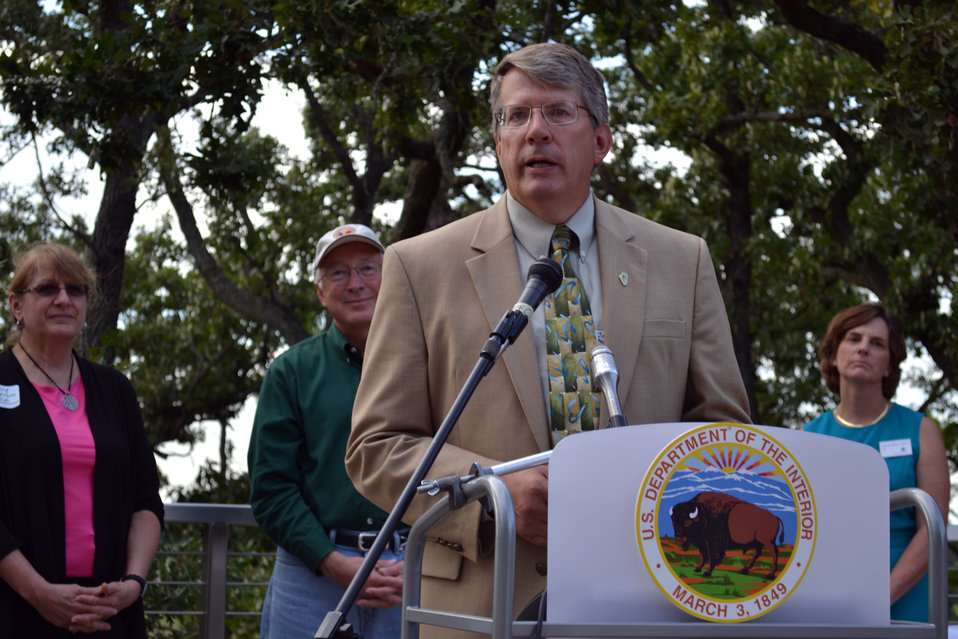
Illinois Department of Natural Resources Deputy Director John Rogner gave depth to the history of the planning for Hackmatack.